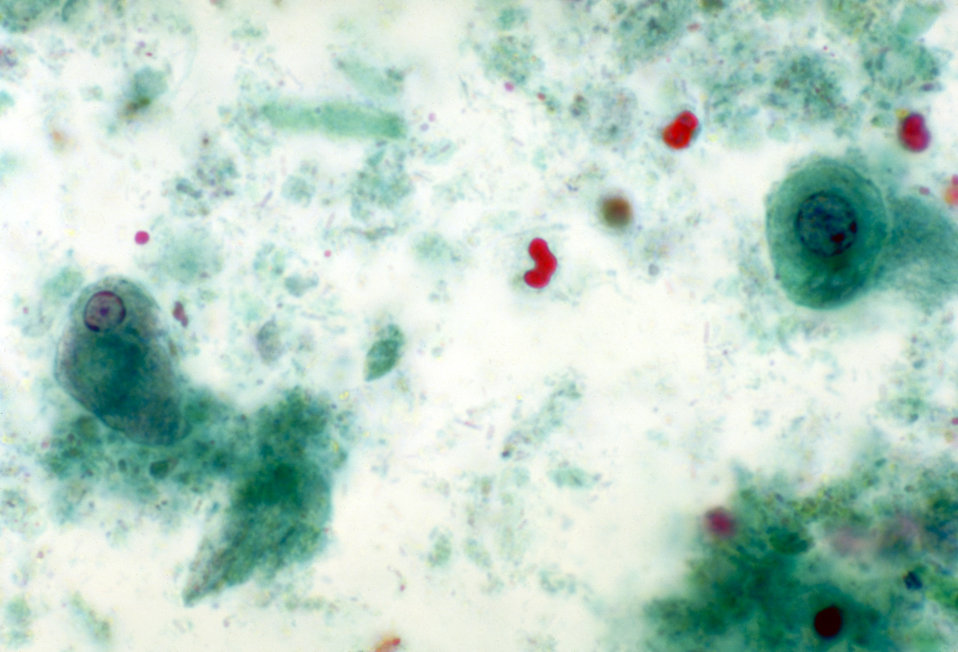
This photomicrograph depicts a parasitic amoeba, Entamoeba histolytica, amongst a number of epithelial cells.